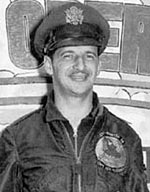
Capt. Pete Fernandez

Capt. Manuel J. Fernandez Jr. flew 124 combat missions in Korea with the 4th Fighter Interceptor Wing.